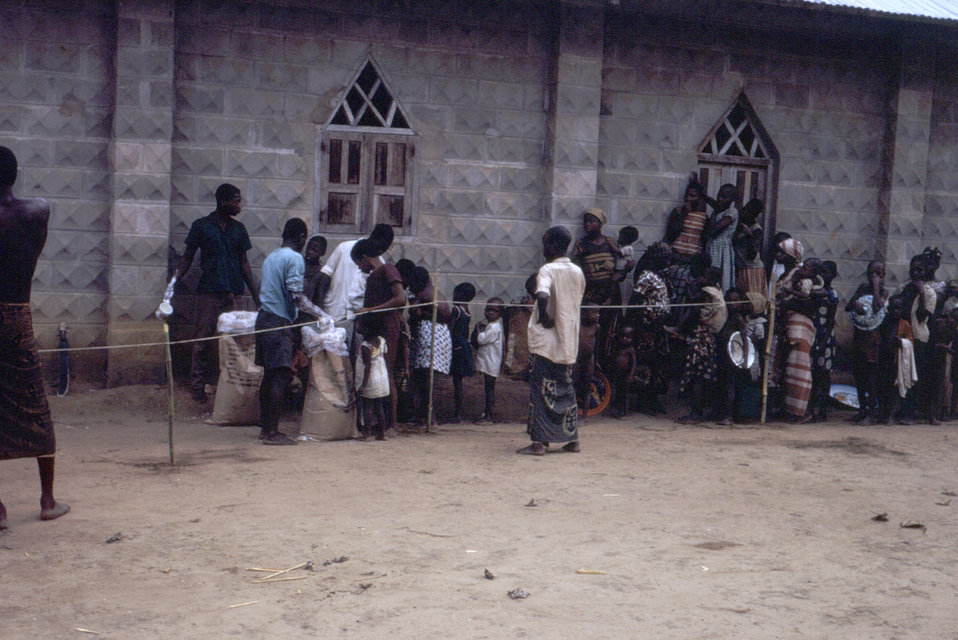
This 1968 photograph depicted a food distribution line for refugees of the Nigerian-Biafran civil war.